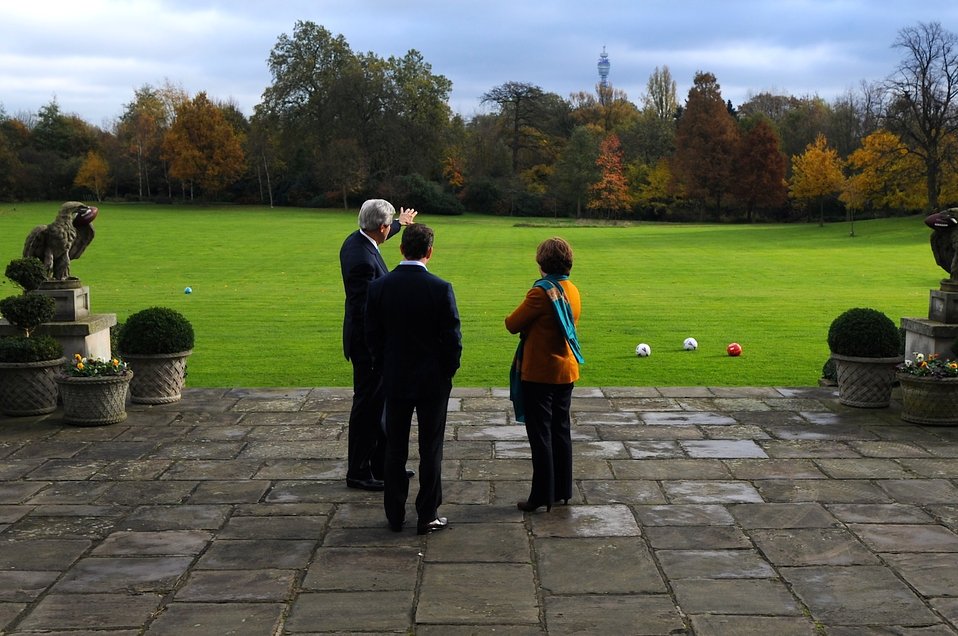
Secretary Kerry and EU High Representative Ashton Speak at Winfield House in the United Kingdom

U.S. Secretary of State John Kerry, European Union High Representative Catherine Ashton and U.S. Ambassador to the United Kingdom Matthew Barzun speak together on the grounds of Winfield House, the ambassador's official residence, in London, United Kingdom, November 24, 2013. Lady Ashton accompanied Secretary Kerry on his travel from Geneva, Switzerland, to London, United Kingdom, after all-night P5 1 meetings about Iran's nuclear capabilities.